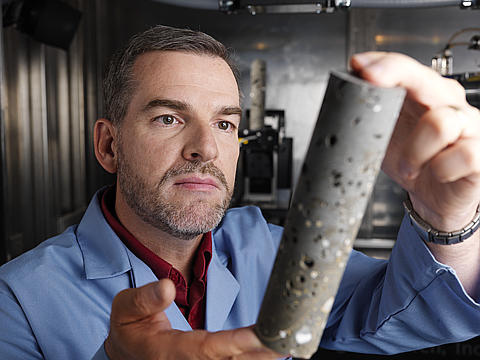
Pacific Northwest National Laboratory addresses carbon emissions that contribute to climate change which has become an international challenge.
A team studying basalts to determine if carbon dioxide can be safety and permanently stored in these massive, deep underground rock formations.